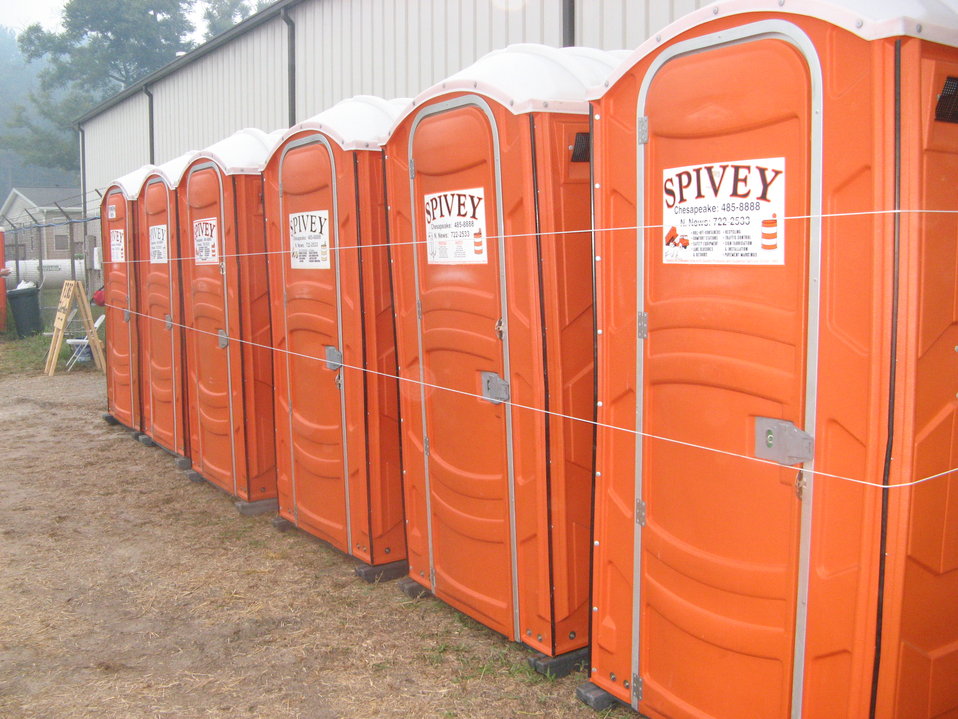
Preparing for Irene

Suffolk, VA, August 2011. Porta potties at the Lateral West Fire Camp are strapped together with parachute cord in preparation for Hurricane Irene. All equipment and people from the fire in Great Dismal Swamp were brought in and secured.